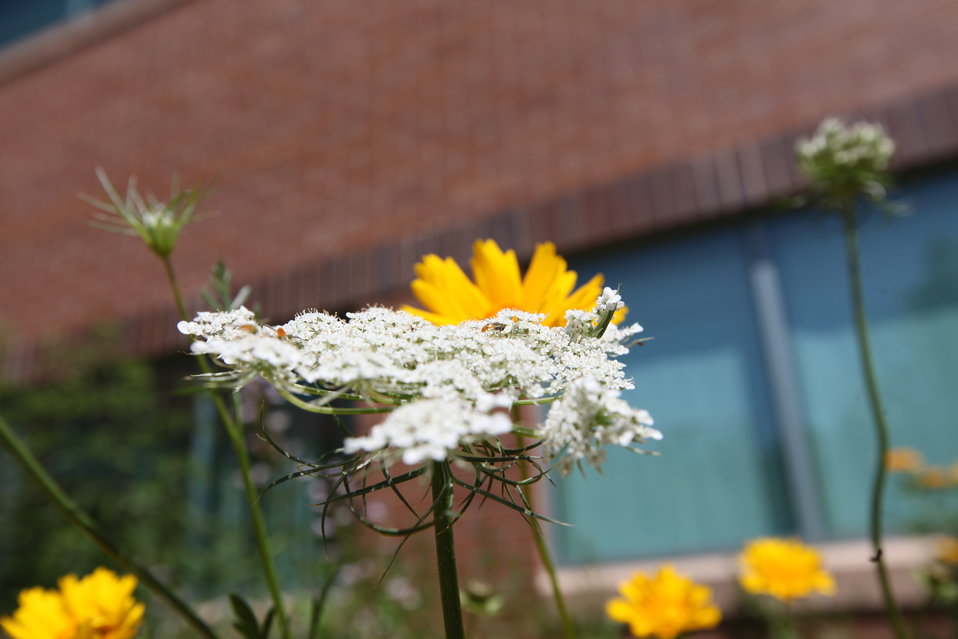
Queen Anne's Lace

A Queen Anne's lace flower in the pollinator garden outside the Regional Office building in Hadley, MA.